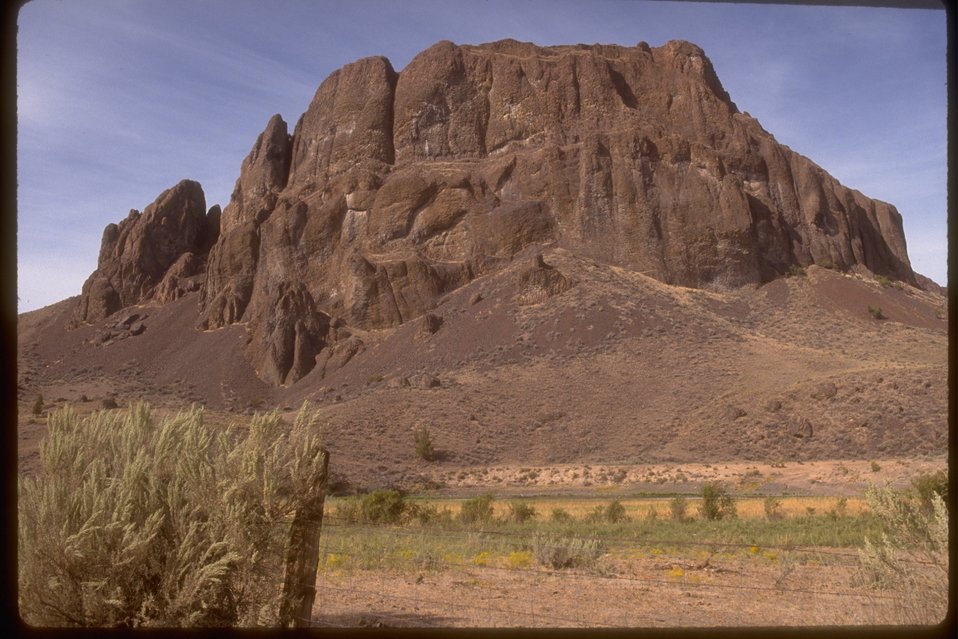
John Day River Series.